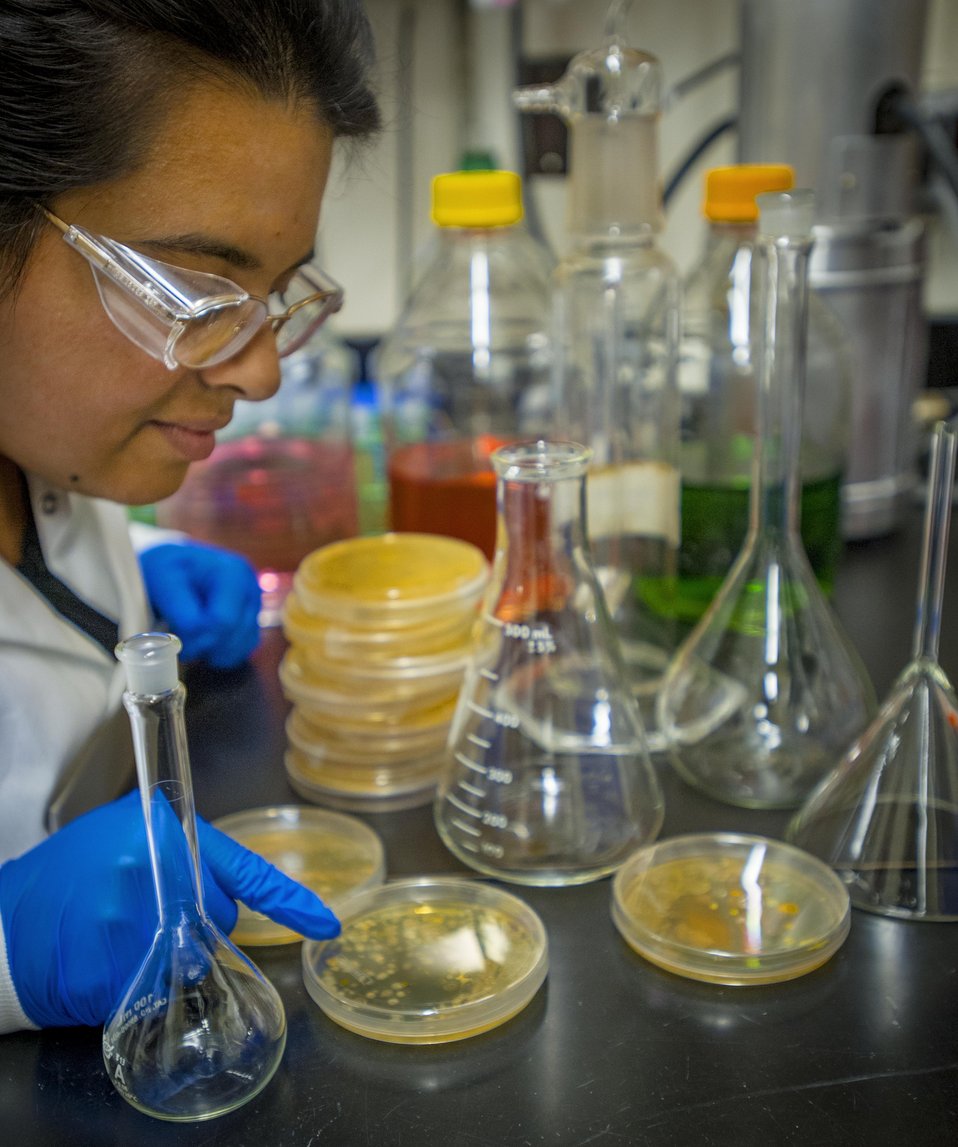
Shown are glass bioreactors and anaerobic chamber- research for enigma(ecosystems and networks integrated with genes and assemblies) at Lawrence Berkeley National Laboratory.